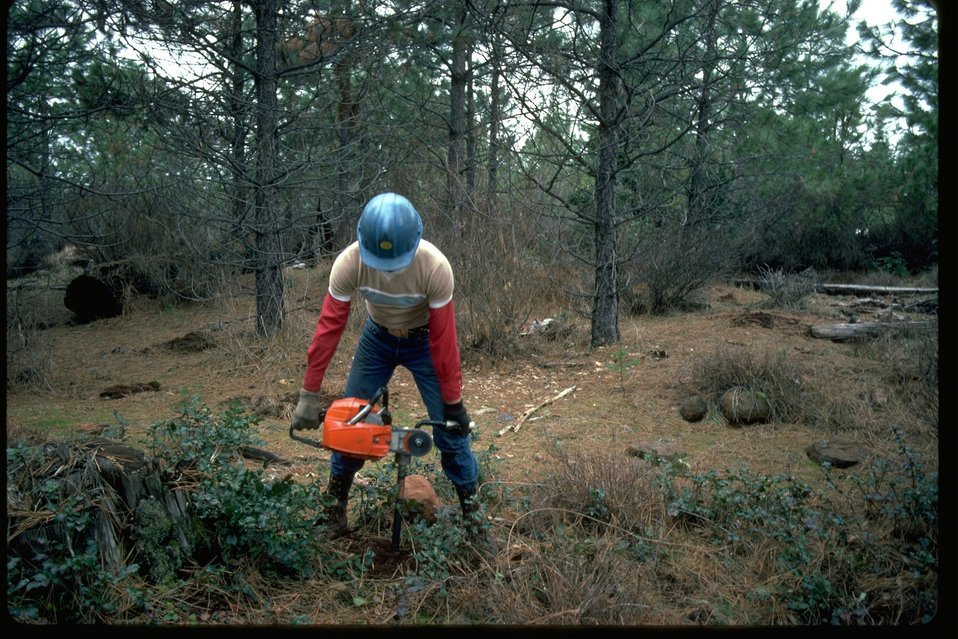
Forester using an auger for tree planting.